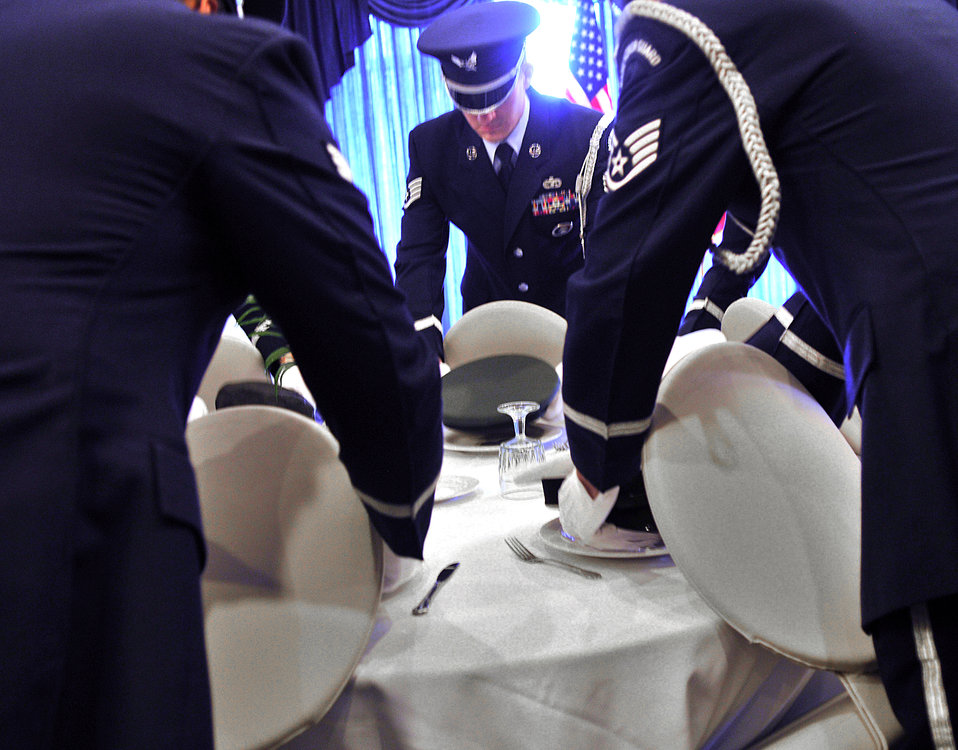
Former POW inspires audience with experiences, wisdom

Ramstein honor guard members place a hat for each branch of service on the prisoner of war/missing in action table during a luncheon Sept. 17, 2010, at Ramstein Air Base, Germany.